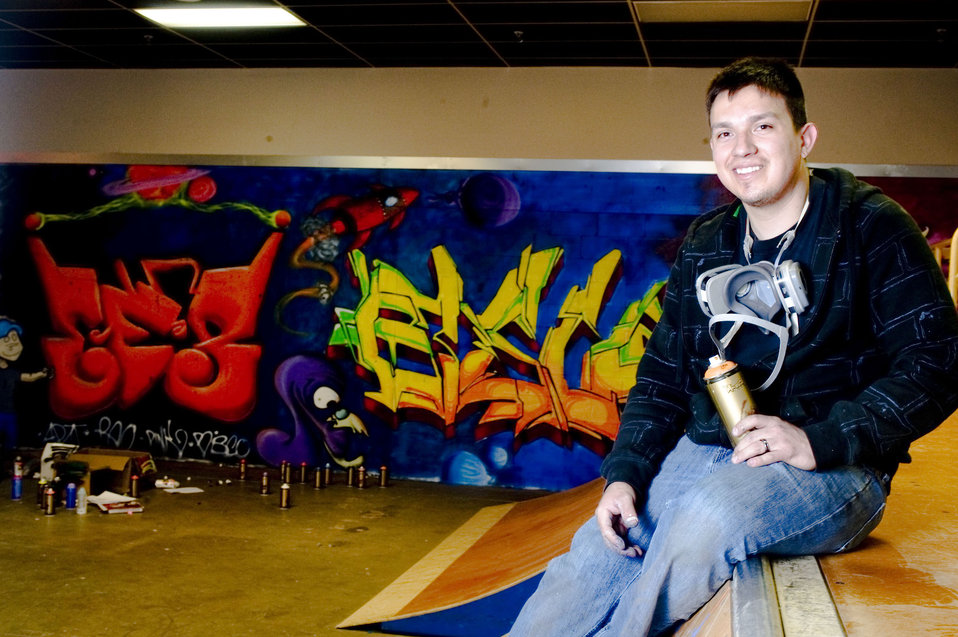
It's not grafitti, it's art

Staff Sgt. Art Delafuente takes a break in front of his graffiti mural at the indoor skate park in the base community center April 3 at Elmendorf Air Force Base, Alaska. Sergeant Delafuente is a crew chief from 19th Aircraft Maintenance Unit and has spent countless hours volunteering to paint the skate park with his artwork.